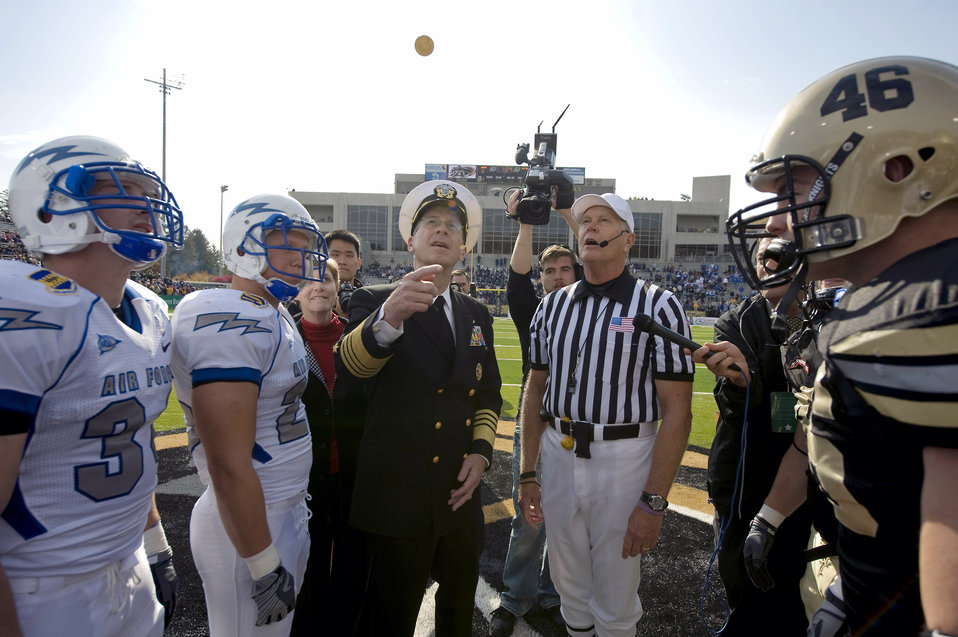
Football: Falcons top Army in slugfest

Navy Adm. Michael G. Mullen flips a coin at the beginning of the U.S. Military Academy and U.S. Air Force Academy football game Nov. 1 at West Point, N.Y. The Falcons defeated the Black Knights 16-7 in the annual battle. Admiral Mullen is the chairman of the Joint Chiefs of Staff.